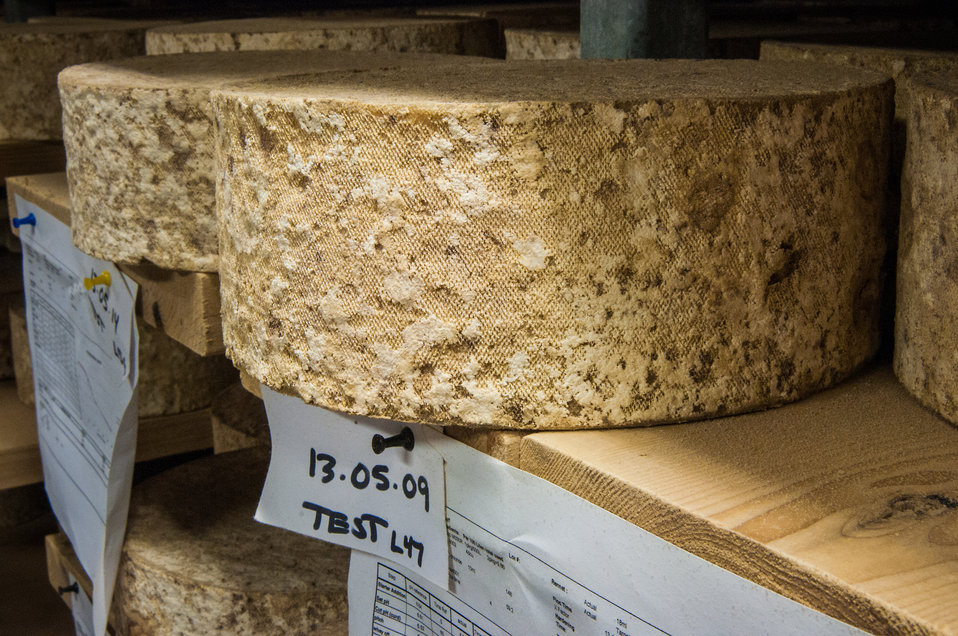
Bayley Hazen Blue is a natural-rind blue cheese produced by The Cellars at Jasper Hill in Greensboro, VT. The usual peppery spice character associated with blue cheese takes a backseat to sweet, nutty, and grassy flavors in the milk. The breakdown of fats and proteins during ripening often show a distinct licorice flavor in the creamy and crumbly paste. The name, however, comes from a Vermont landmark – the Bayley Hazen Military Road, commissioned by George Washington as a Revolutionary War supply route. The Cellars at Jasper Hill, an innovative 22,000 square foot underground facility consisting of seven ageing caves received a U. S. Department of Agriculture (USDA) Rural Development (RD) Business and Industry Guaranteed (BIG) Loan. This loan was used to construct state-of-the-art artesian cheese aging cave facility to support expanded on-farm value-added cheese production as well as contract aging for other local cheese makers so they may access the growing market for artisan cheese nationwide on Sep. 19, 2013.